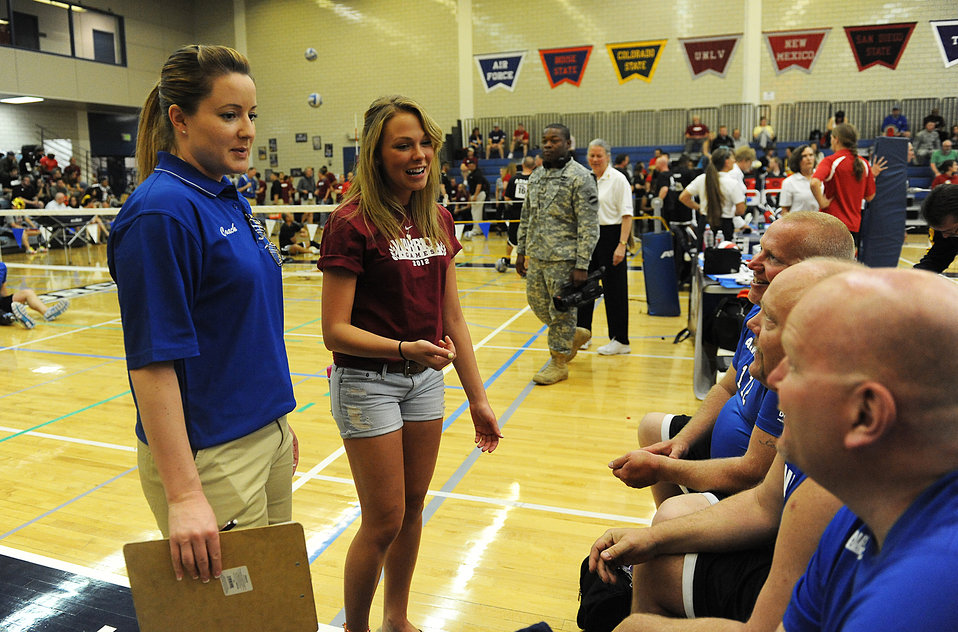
Warrior Games

Dani Correll, back center, a volunteer, talks to members of the the Air Force team before a sitiing volleyball game during Warrior Games 2012 at the U.S. Air Force Academy in Colorado Springs, Colo., May 3, 2012.